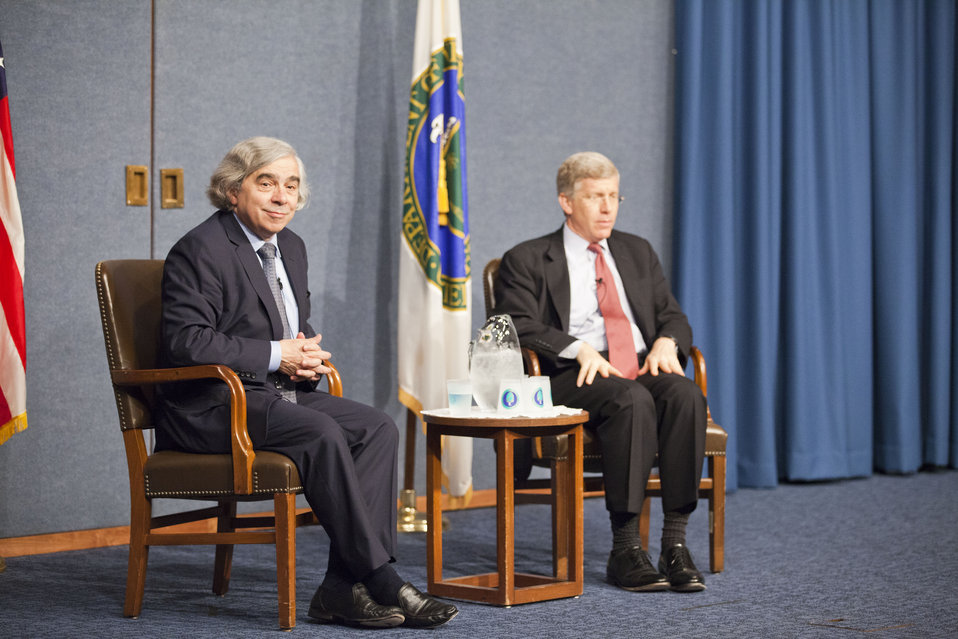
DOE Town Hall

On May 22, 2013, newly sworn-in Energy Secretary Dr. Ernest Moniz opened up a town hall forum. DOE employees were invited to attend, and submit questions to staff.